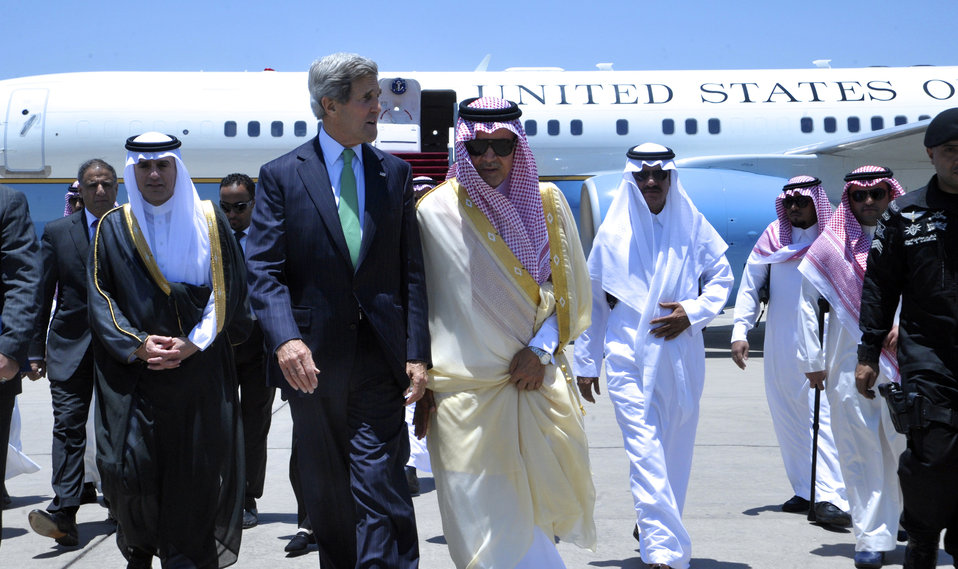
Secretary Kerry Walks With Saudi Foreign Minister al-Faisal

U.S. Secretary of State John Kerry walks with Saudi Foreign Minister Prince Saud al-Faisal upon his arrival in Jeddah, Saudi Arabia, on June 25, 2013.